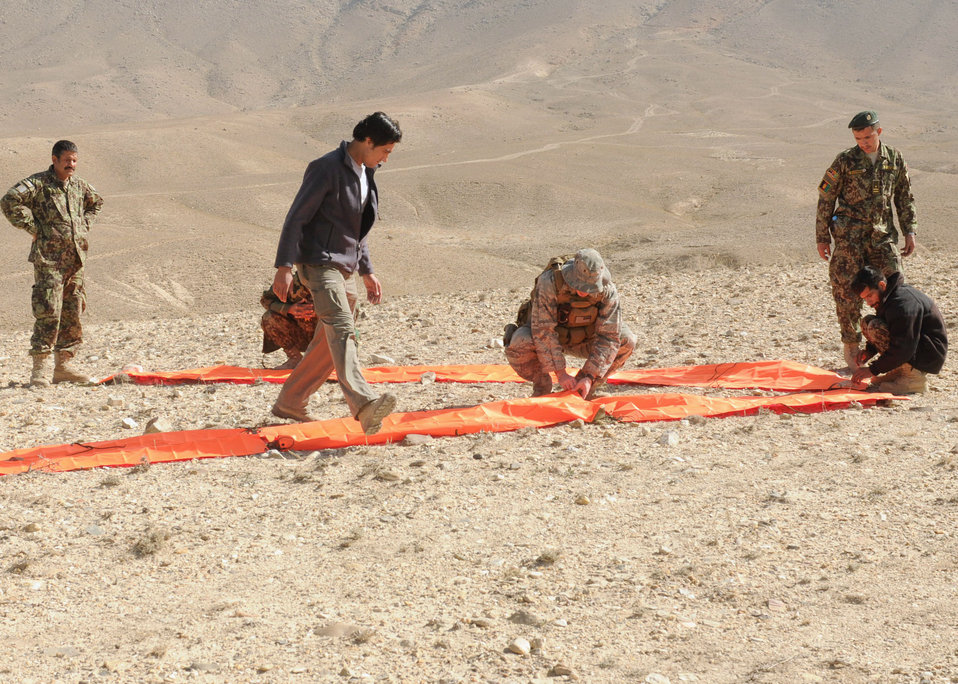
Signal training

Afghan life support airmen practice using signaling devices. They will begin teaching this skill to Afghan air force pilots so they know how to signal for rescue.